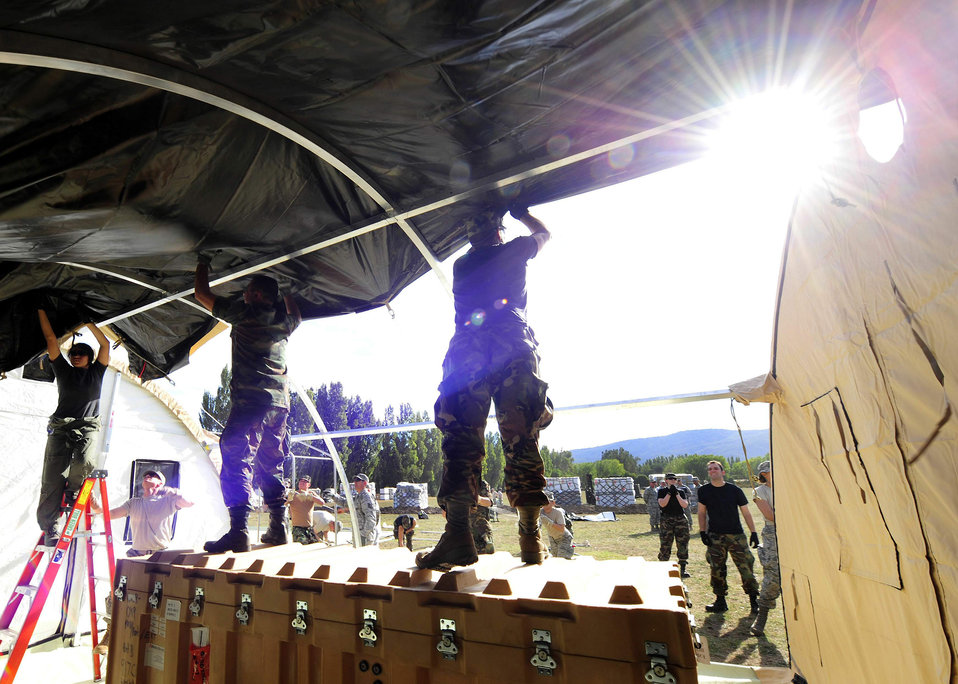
Airmen build hospital in Chile

Airmen from an Air Force Expeditionary Medical Support team along with members of the Chilean army build a mobile hospital March 10, 2010, in Angol, Chile. About 60 medical Airmen will work alongside local Chilean medics to provide medical support to the local community.